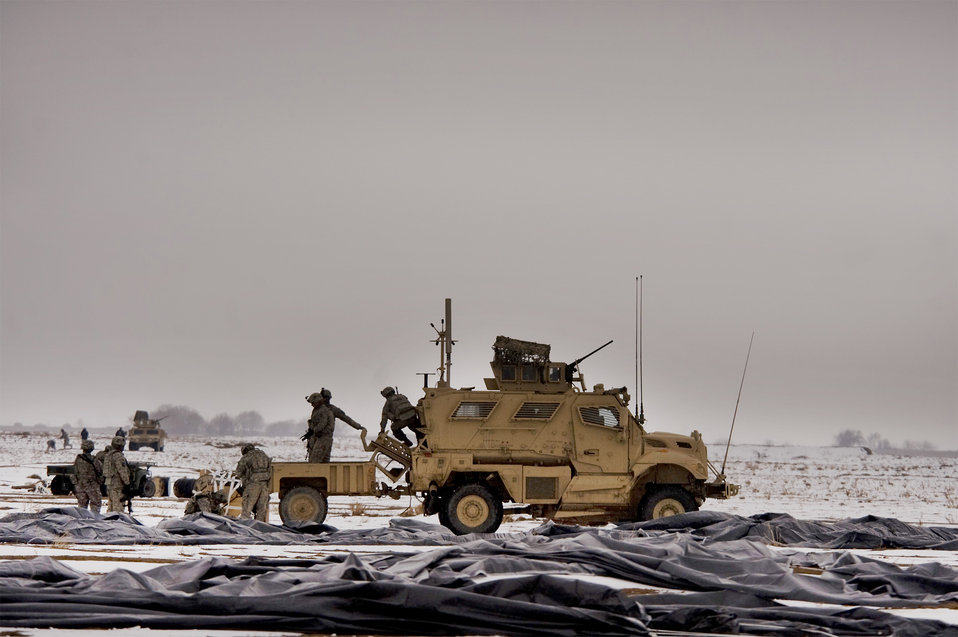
Waza K'wah Air Delivery

Soldiers from Task Force Currahee, 4th Brigade, 101st Airborne Division, recover bundles of fuel Jan. 29, 2011, that were air delivered to Forward Operating Base Waza K'wah, Afghanistan, via a C-17 Globemaster III. The fuel was delivered to help sustain members of Task Force Currahee, whose only means of resupply is through air delivery.